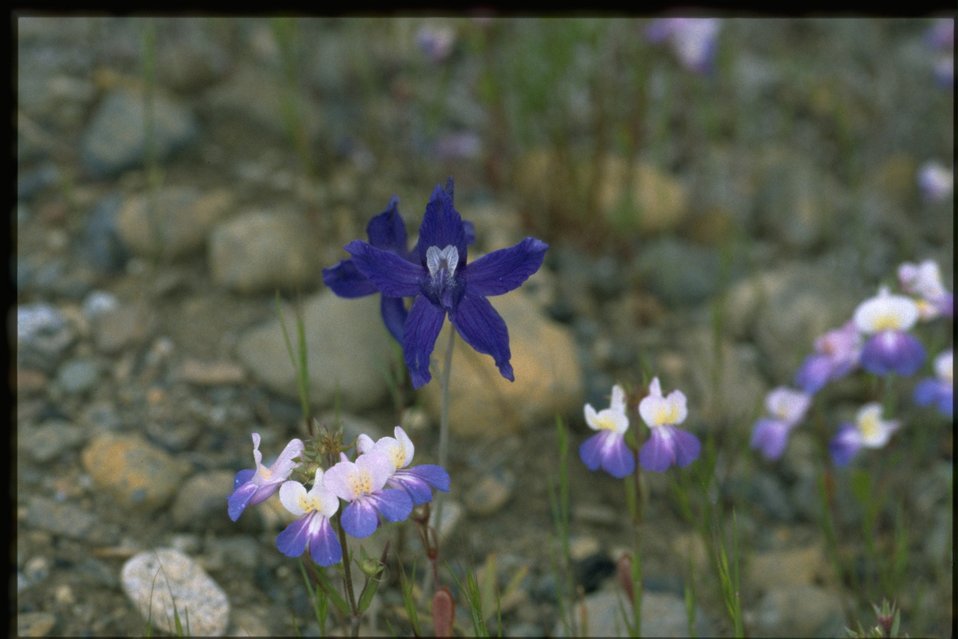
Medium shot of Delphinium wildflowers.